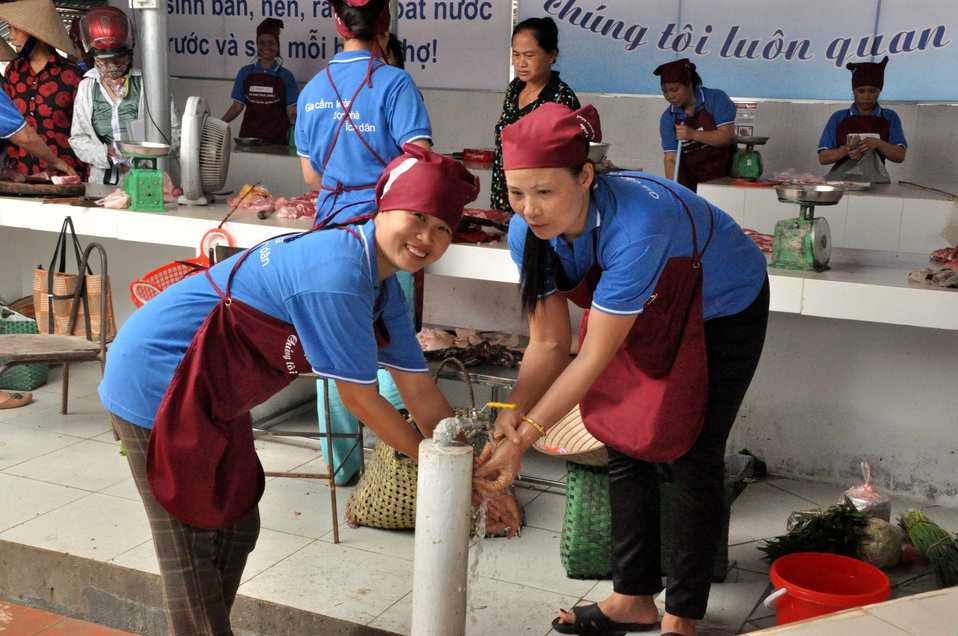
Handover Ceremony Hoa Mac Market Ha Nam

October 26, 2012